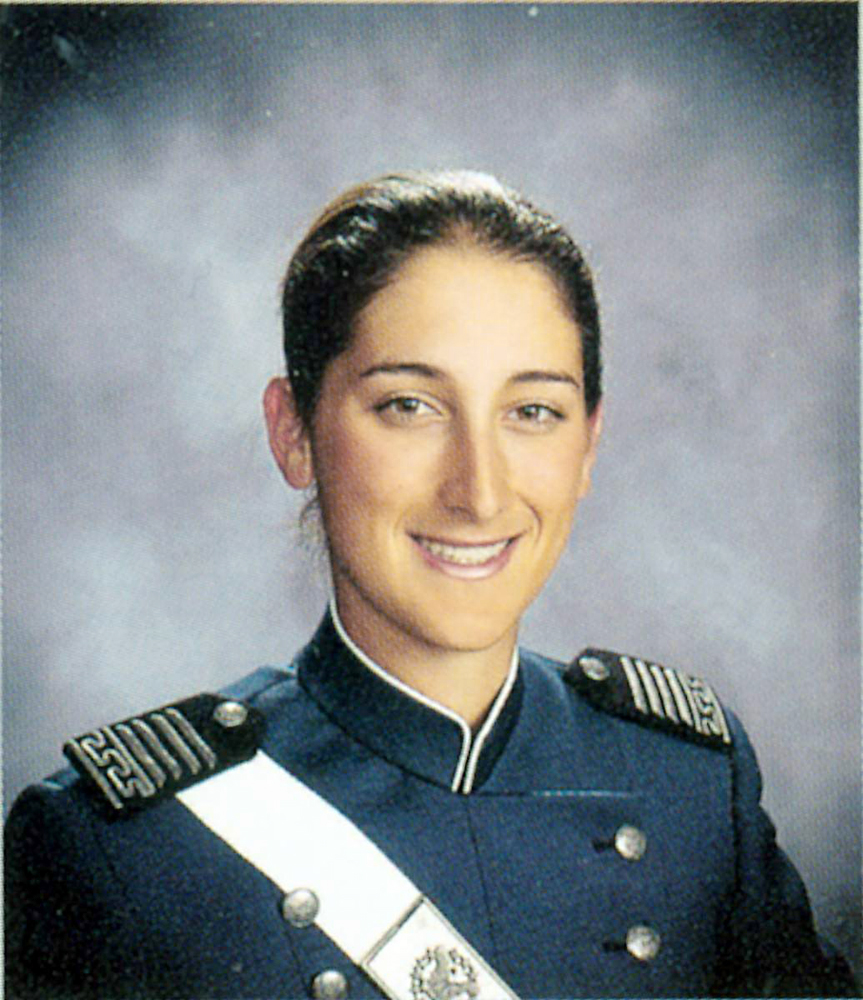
Organization posthumously awards Medal for Valor to Airman

1st Lt. Roslyn L. Schulte was named the recipient of the Medal for Valor posthumously from the Office of the Director of National Intelligence Jan. 22, 2010. Lieutenant Schulte, 25, of St. Louis died May 20, 2009, near Kabul, Afghanistan, of wounds suffered from an improvised explosive device. Lieutenant Schulte is the 10th U.S. Air Force Academy graduate, and first female, killed while supporting operations Iraqi Freedom and Enduring Freedom.